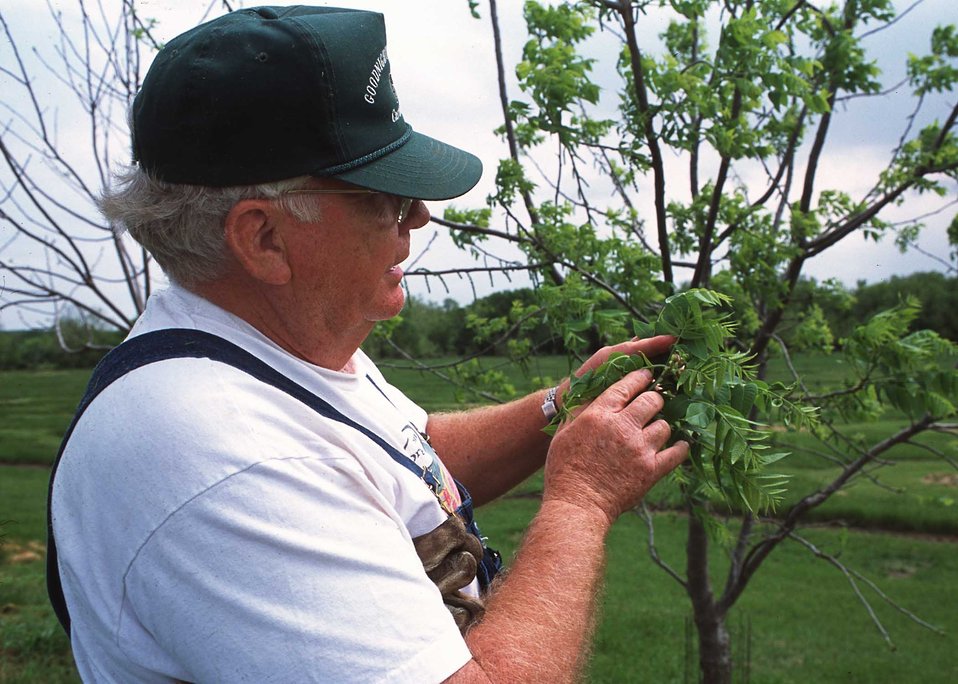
Dr. Howard Roberts inspects buds on a young walnut tree on his southwestern Missouri tree farm.